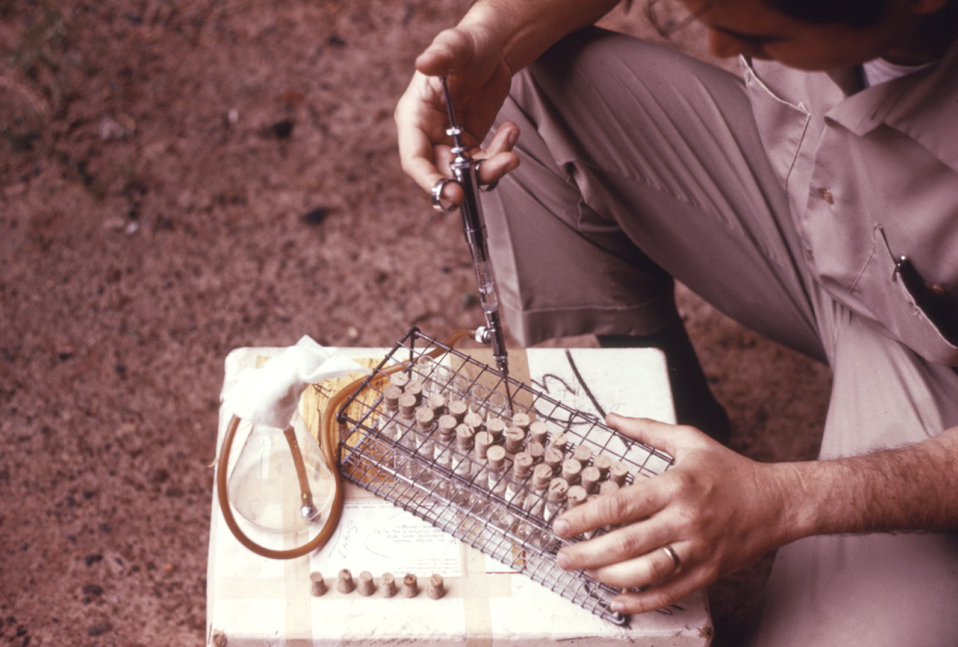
This CDC technician is shown here adding diluent to specimens using a Cornwall� pipette during an arbovirus field study.